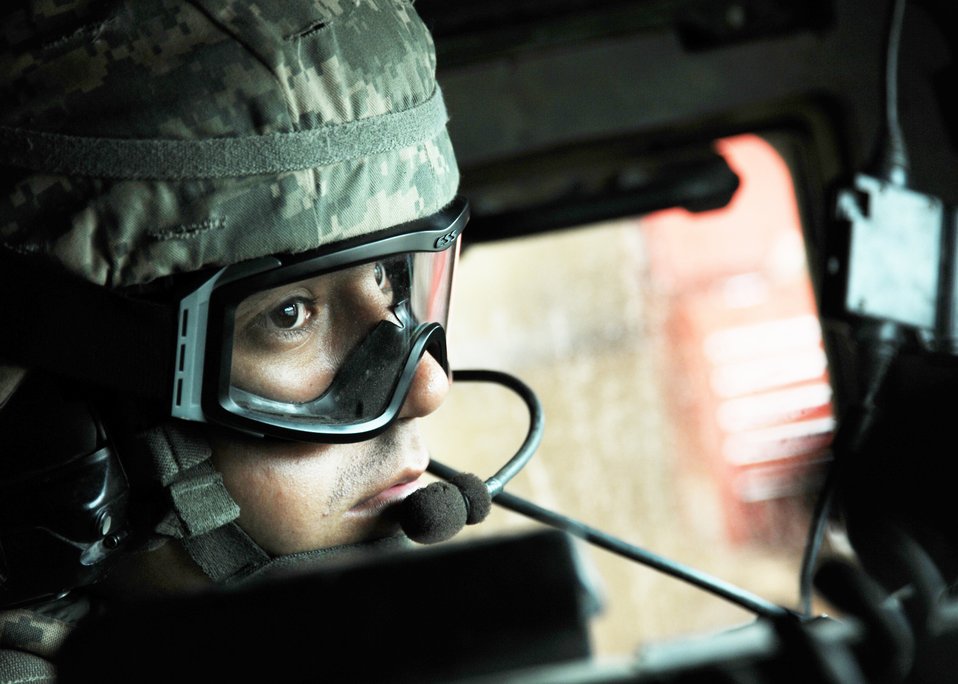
Need the 'go' sign...

Senior Airman Steve Forlong waits to drive outside the wire Oct. 29, 2009, for a patrol mission at Joint Base Balad, Iraq. Airman Forlong is a member of the instant response force which conducts patrols around the immediate vicinity of the base. He is desk controller with the 532nd Expeditionary Security Forces Squadron.